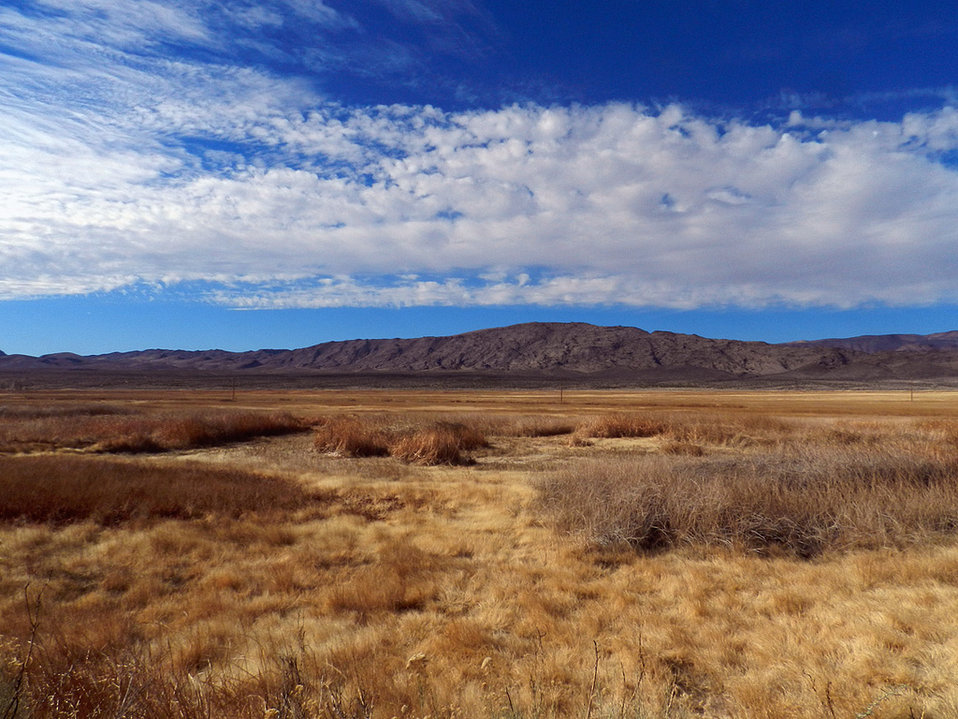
desert sky

Pahranagat National Wildilfe Refuge, NV
Jan. 5, 2012